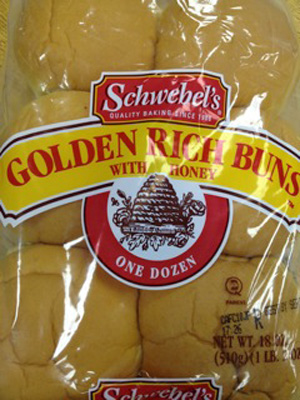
RECALLED – Golden Rich Buns with Honey

September 16, 2013 – Product Recall – Schwebel Baking Company Voluntarily Recalls Schwebel's Golden Rich Buns With Honey Due to Undeclared Eggs.